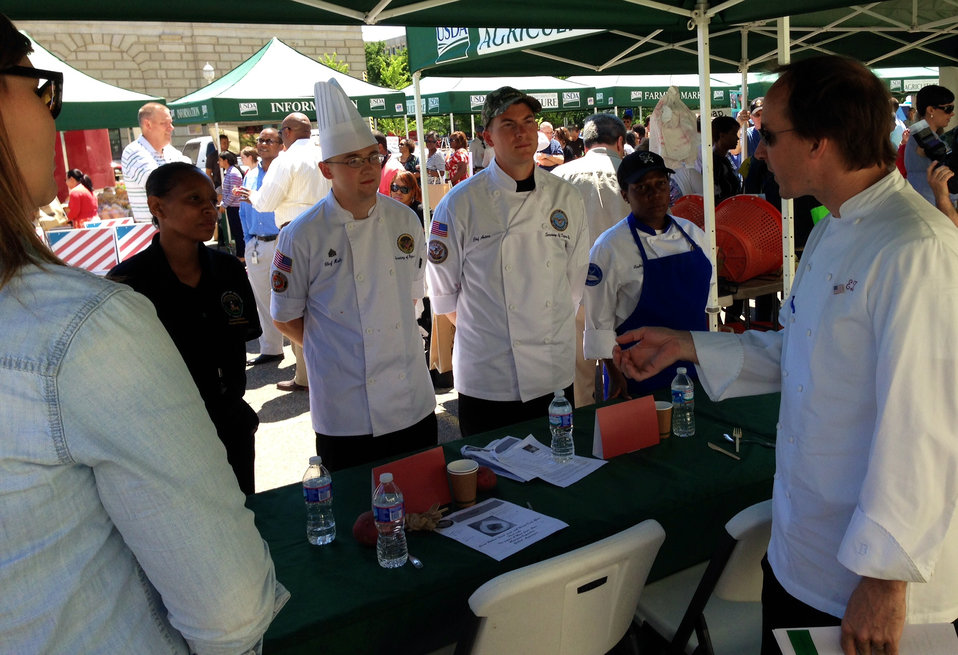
Chef Eric Ziebold gives feedback to the military chef competitors

DC's CityZen restaurant Executive Chef Eric Ziebold was the head judge for the U.S. Department of Agriculture's (USDA) Military Chef Barbeque Battle held on the opening of USDA's Farmers Market in the east parking lot of USDA on Friday, Jun. 6, 2014. After the judges sampled all the entries, Chef Ziebold gave feedback to the contestants.